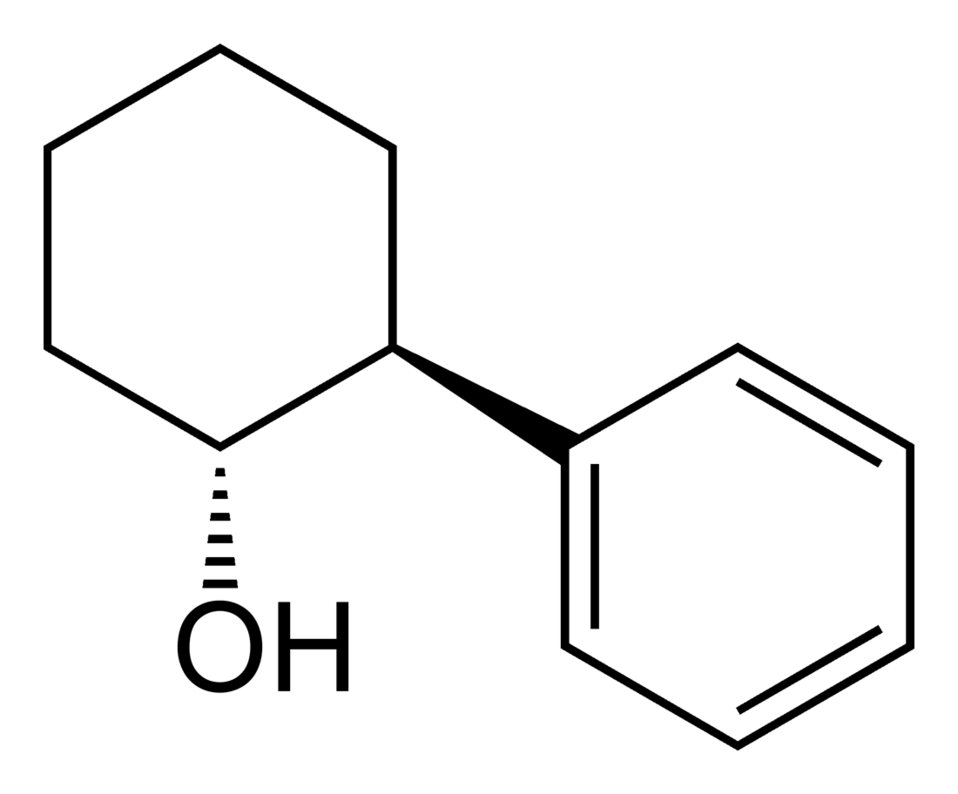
Skeletal formula of (1R,2S)-2-phenylcyclohexanol, C12H16O